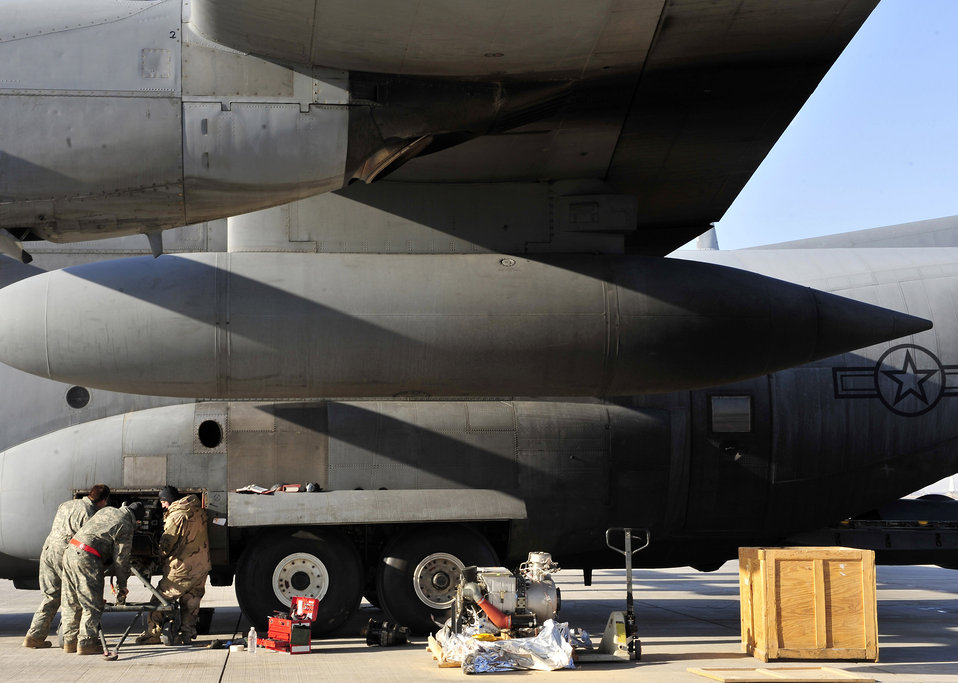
Maintaining mighty Hercules

Technical Sgt. Sam Harmon, Senior Airman Billy Howell and Airman 1st Class Ryan Sluss change an auxiliary power unit of a C-130 Hercules Jan. 16 at Joint Base Balad, Iraq. Sergeant Harmon and Airman Howell are 777th Expeditionary Aircraft Maintenance Unit jet engine mechanics. Airman Sluss is a 777th EAMU crew chief. They are all deployed from Little Rock Air Force Base, Ark.